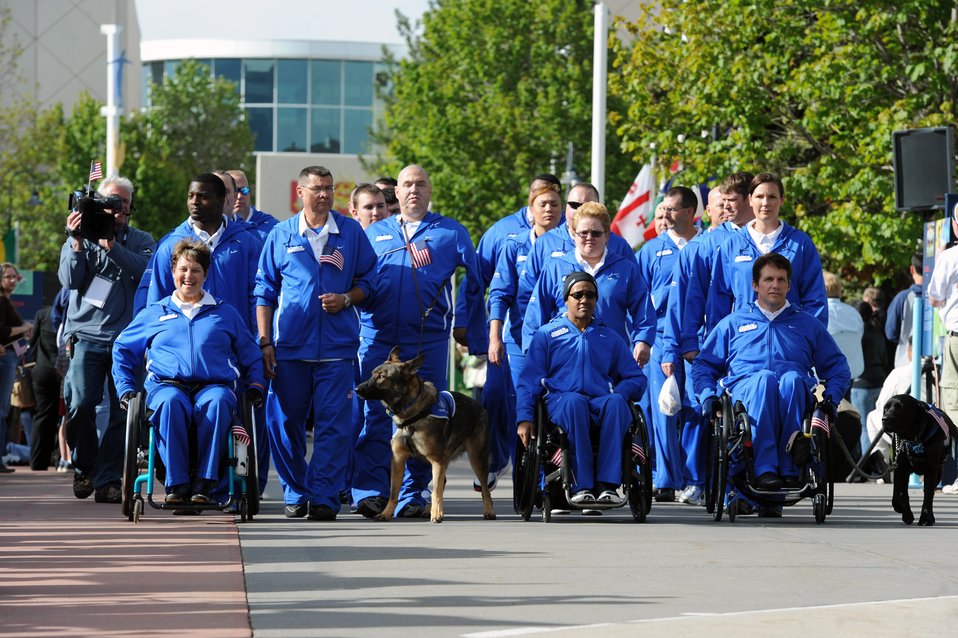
Opening Ceremony

The Air Force team marches down Olympic Path to a cheering crowd May 16, 2011, during the opening ceremony of the 2011 Warrior Games at the U.S. Olympic Training Center in Colorado Springs, Colo. Some 200 wounded warriors and disabled veterans from all the military services are competing in paralympic-style athletic events May 16 through May 21.